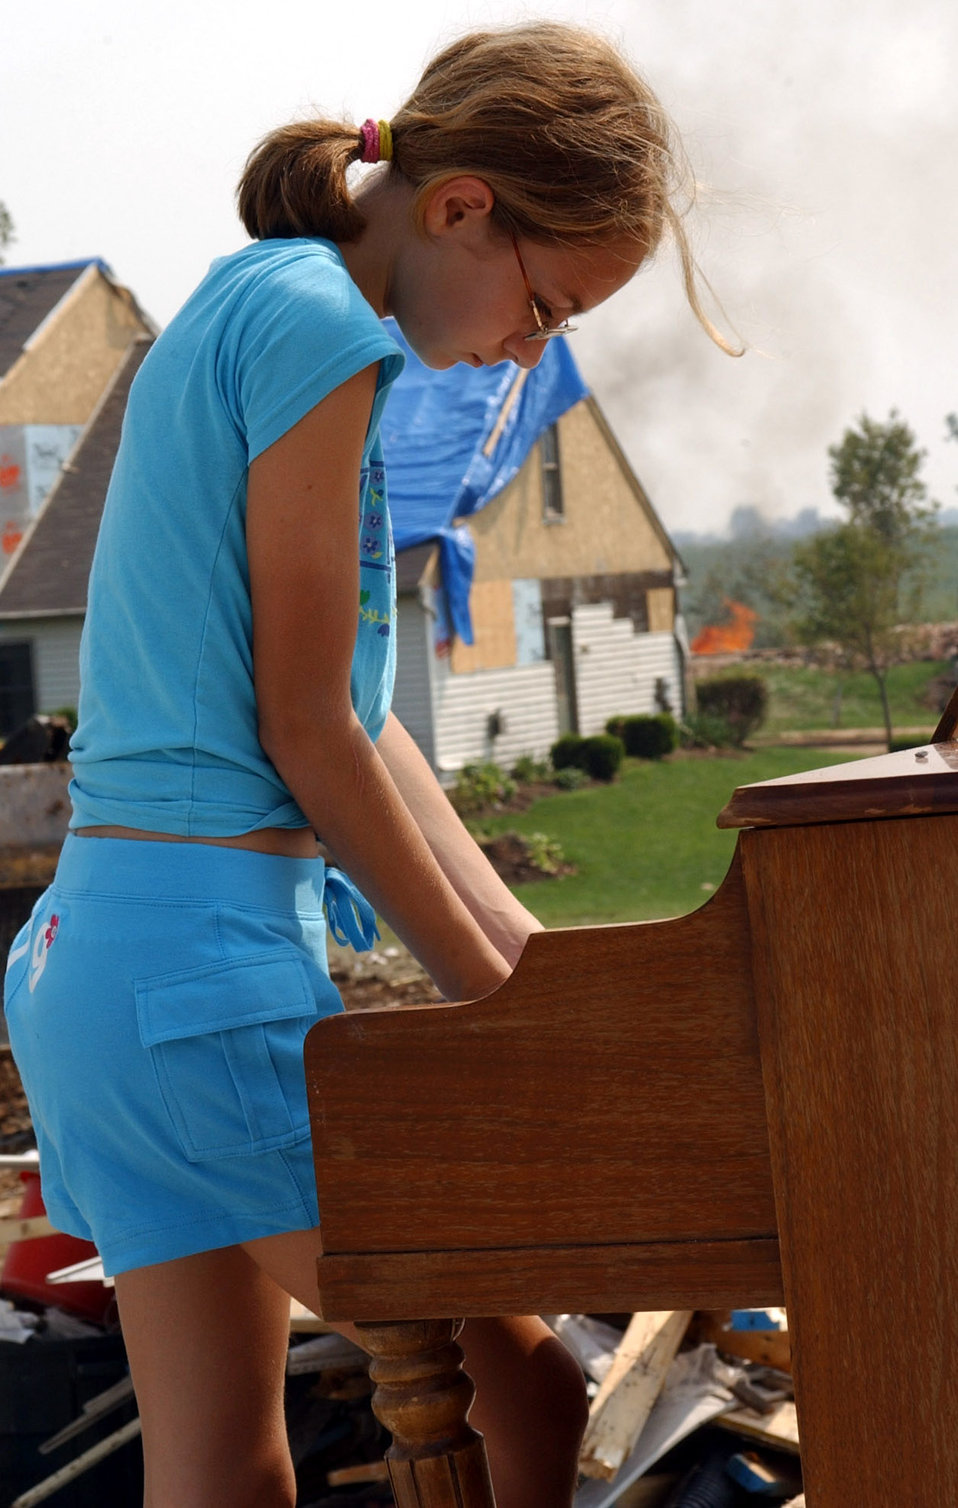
Aftermath of destruction

CAMPBELLTOWN, Pa. -- While fires still burn in the background, Naomi Stewart, 11, takes time to play her family's piano on what used to be the living room floor. A tornado packing 200 mph winds destroyed the home of Senior Master Sgt. John Stewart, an Air National Guardsmen with the 193rd Special Operations Wing at Middletown, Pa.